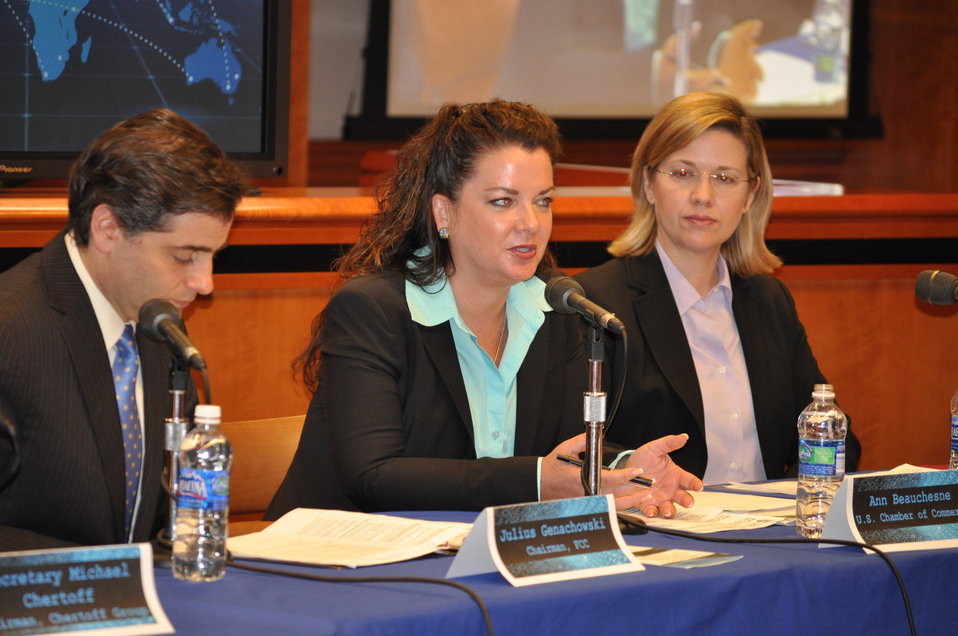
Cybersecurity 5-16

Cybersecurity for Small Business Roundtable; May 16, 2011